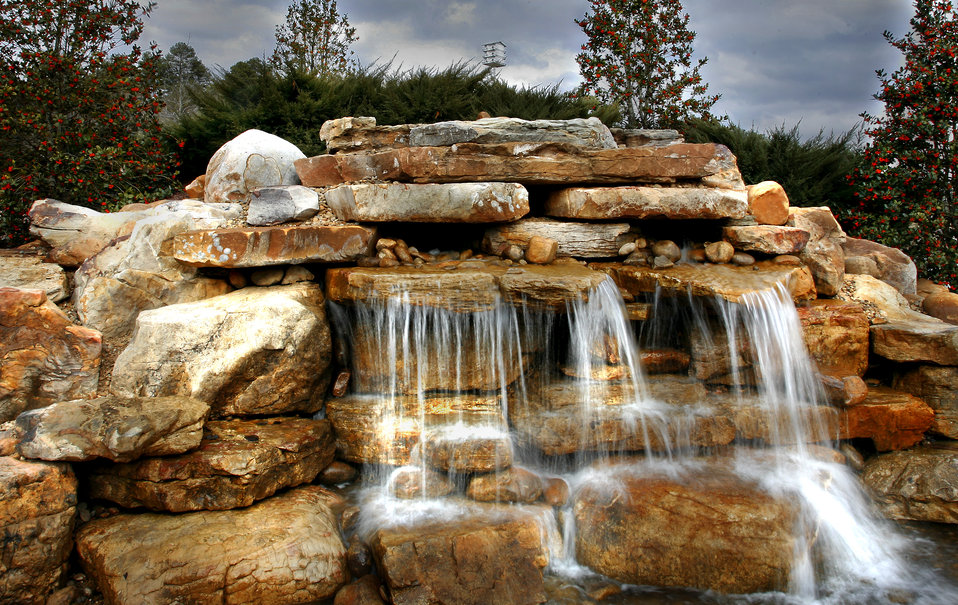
Waterfall beside the visitor center at Oak Ridge National Laboratory.